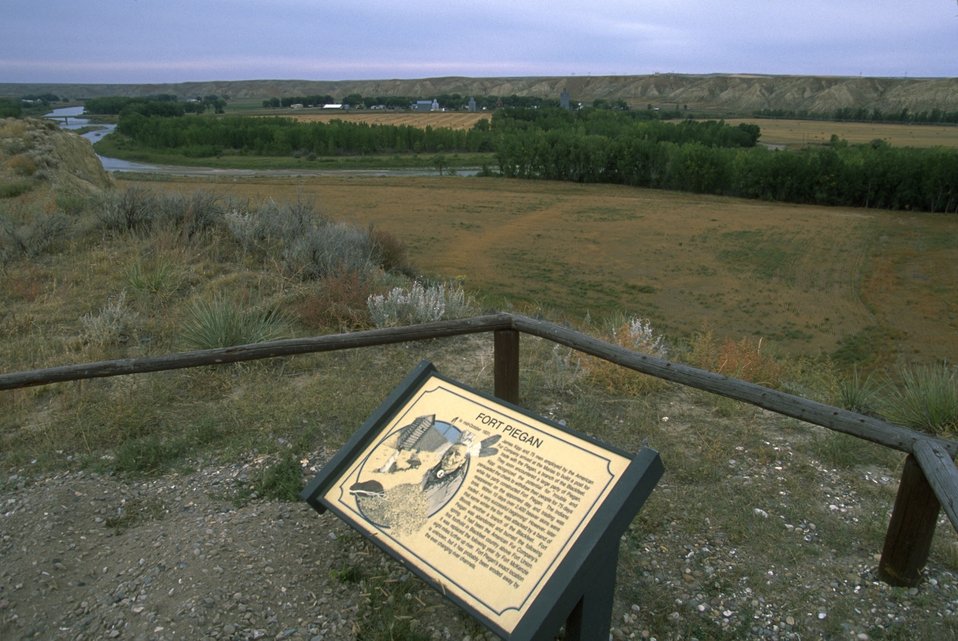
Interpretive sign at Fort Piegan along the Upper Missouri River